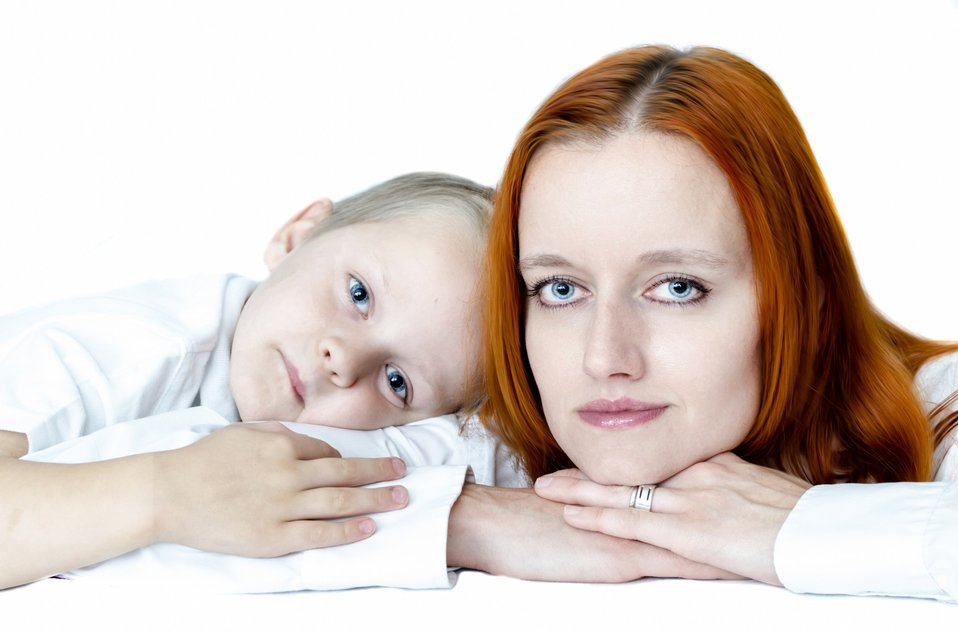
Mum and son isolated on the white background.